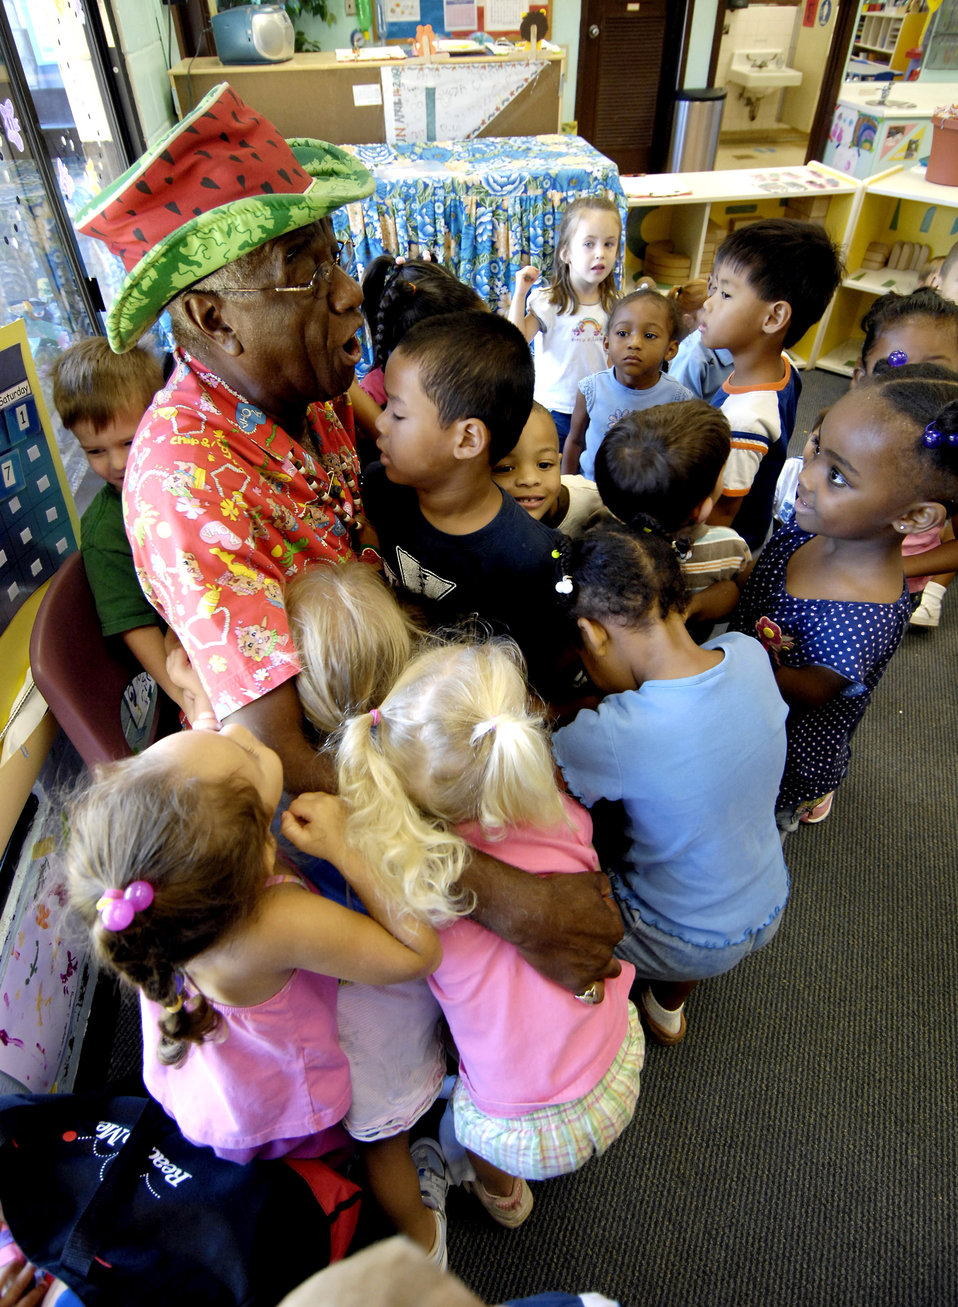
'Famous' former Airman recalls his service

Wally Amos receives hugs from children at the Child Development Center after reading to them Sept. 10 at Hickam Air Force Base, Hawaii. Mr. Amos is an actor, writer and original entrepreneur behind the Famous Amos cookie brand. He is an advocate of literacy and early childhood development, and served in the Air Force four years. He read to children as part of Air Force week Honolulu.